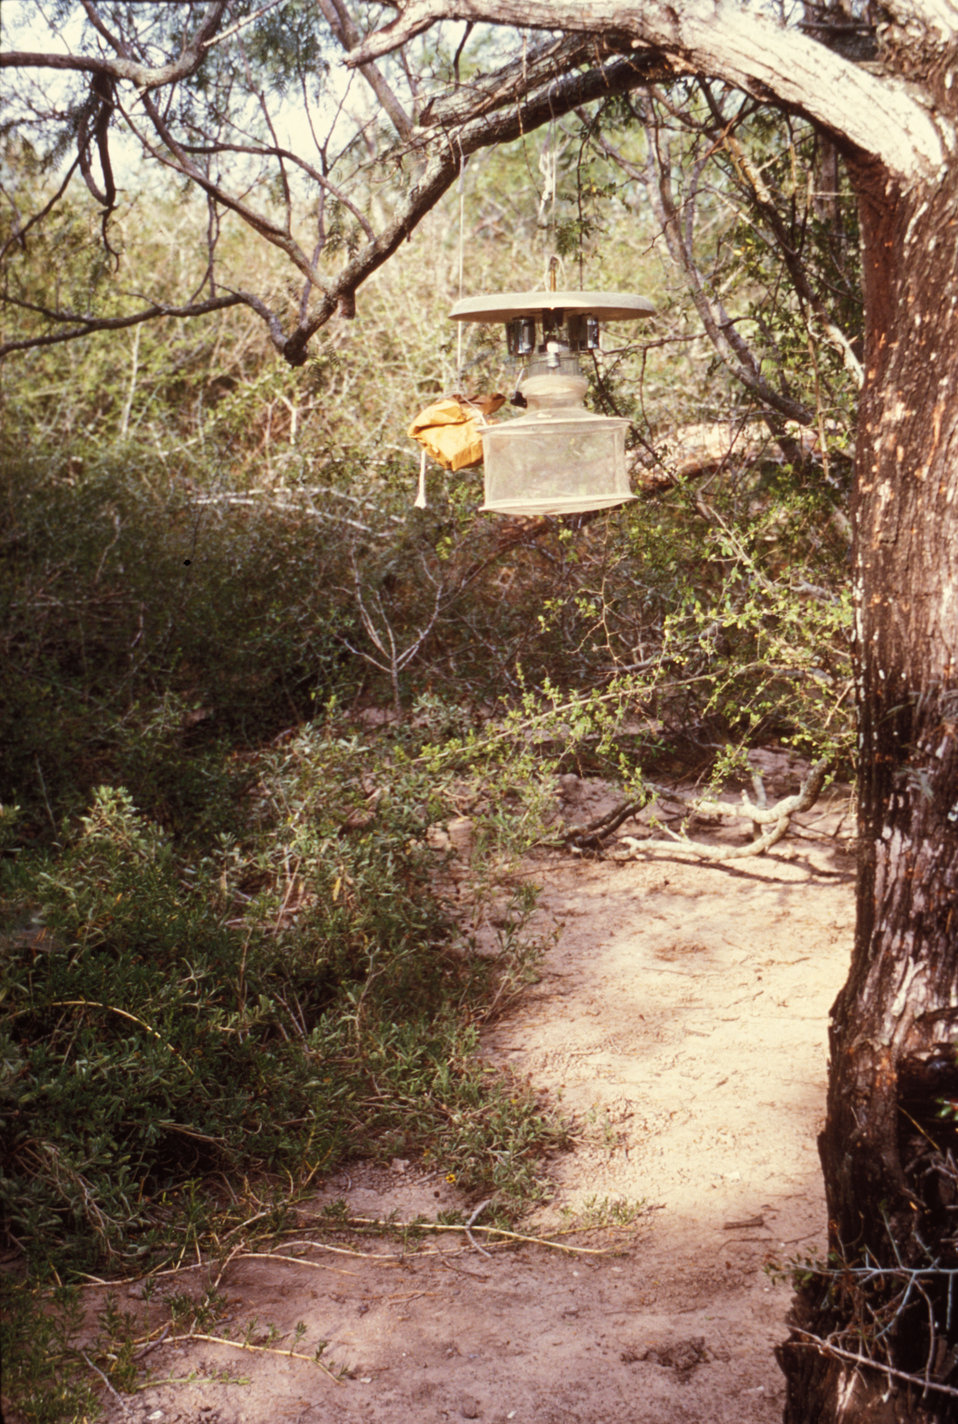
This 1974 photograph shows a CDC light trap used to collect mosquitoes in the field.